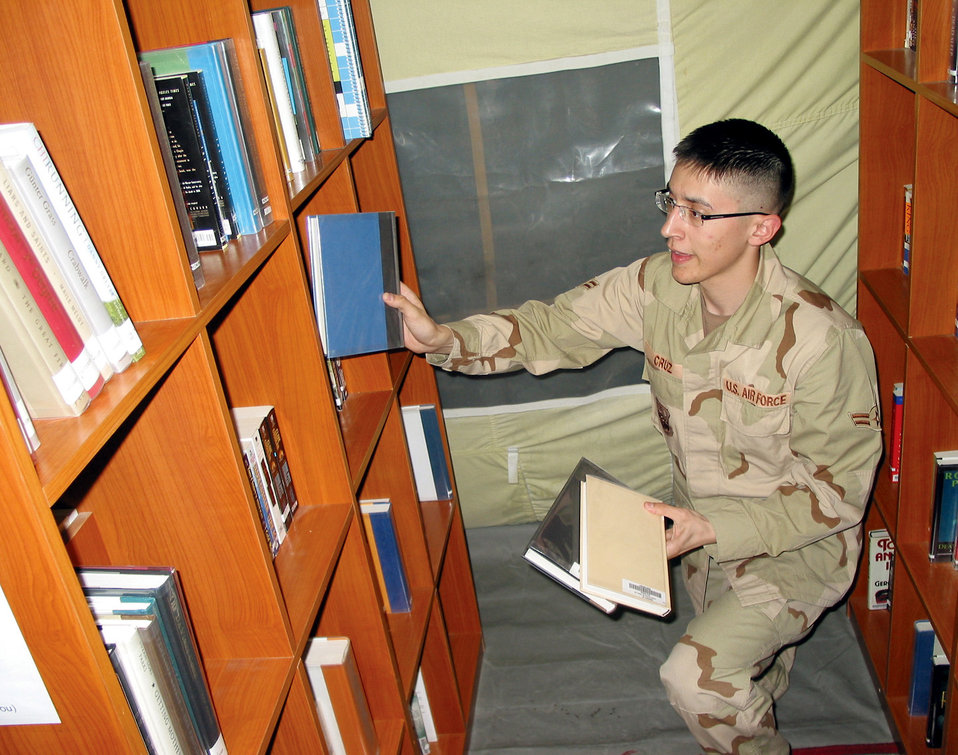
Stocking up

MANAS AIR BASE, Kyrgyzstan -- Airman 1st Class Jesus Cruz stocks shelves at the learning resource center here. The center has books, tapes and DVDs for checkout, and it offers educational tests and opportunities. Airman Cruz is assigned to the 376th Expeditionary Services Squadron and is deployed from Misawa Air Base, Japan.